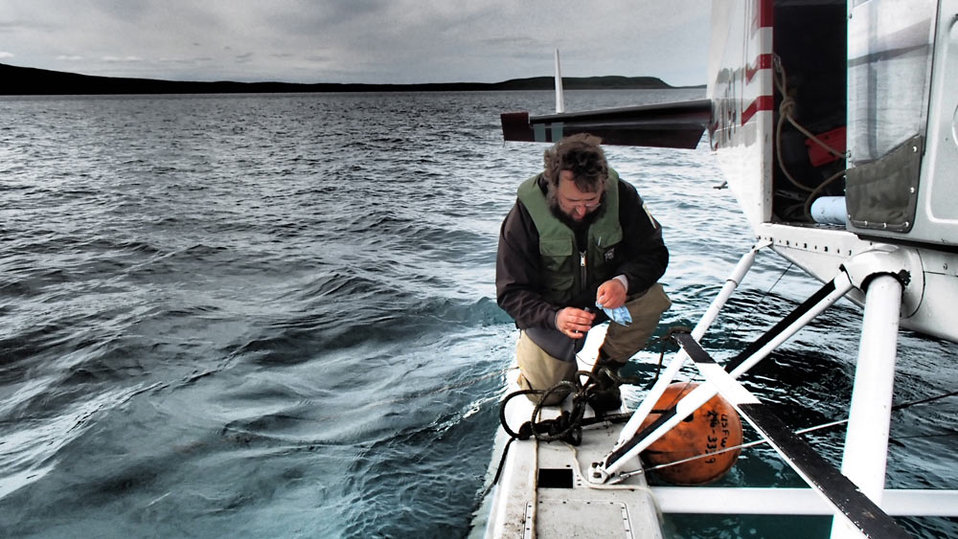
Kevin Payne-Alaska Region

Army veteran Kevin Payne (seen here pulling temperature arrays from Mother Goose Lake) works at Alaska Peninsula/Becharof National Wildlife Refuges.